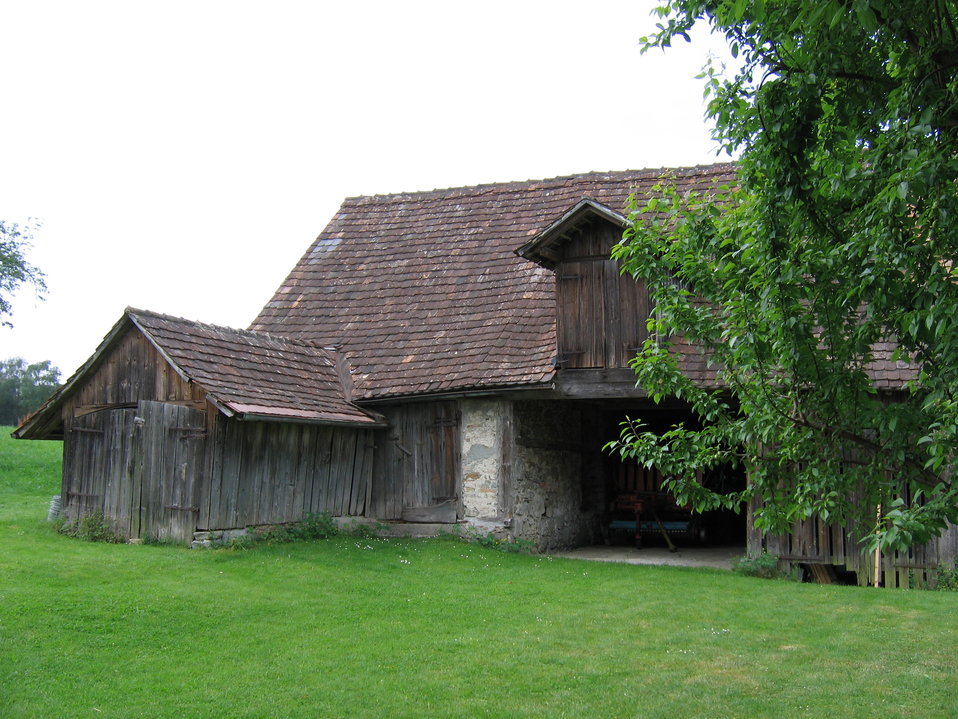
Deutsch: Kressbronn am Bodensee: Hofanlage Milz - Remise